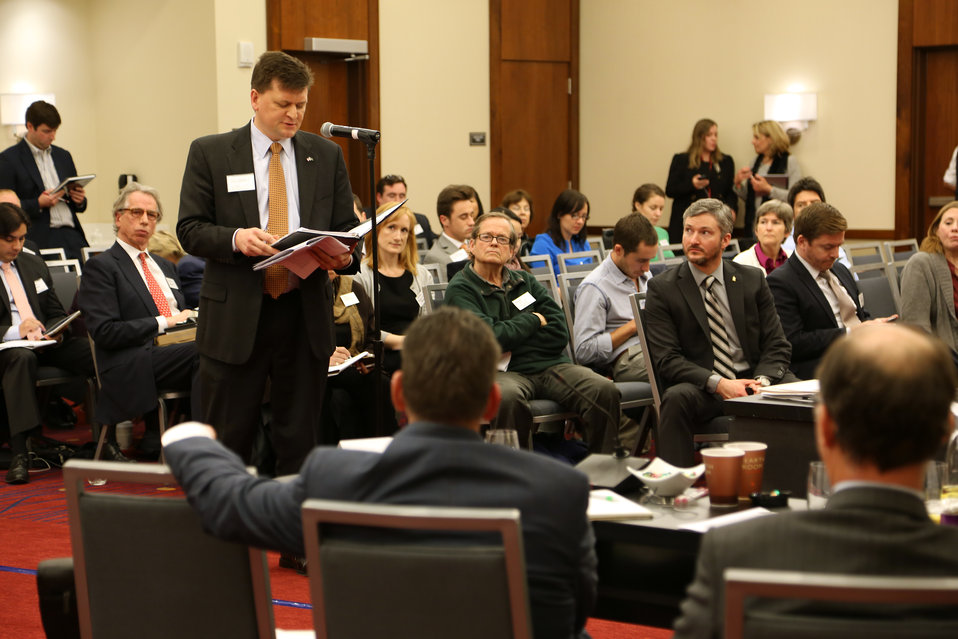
Wildlife Trafficking Advisory Council Meeting March 20, 2014